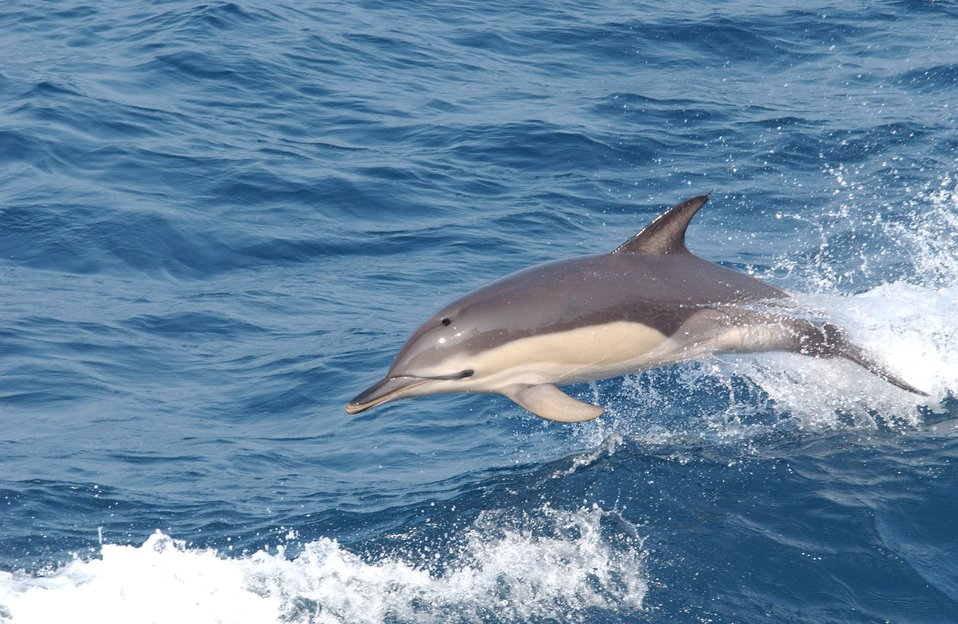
Common dolphin